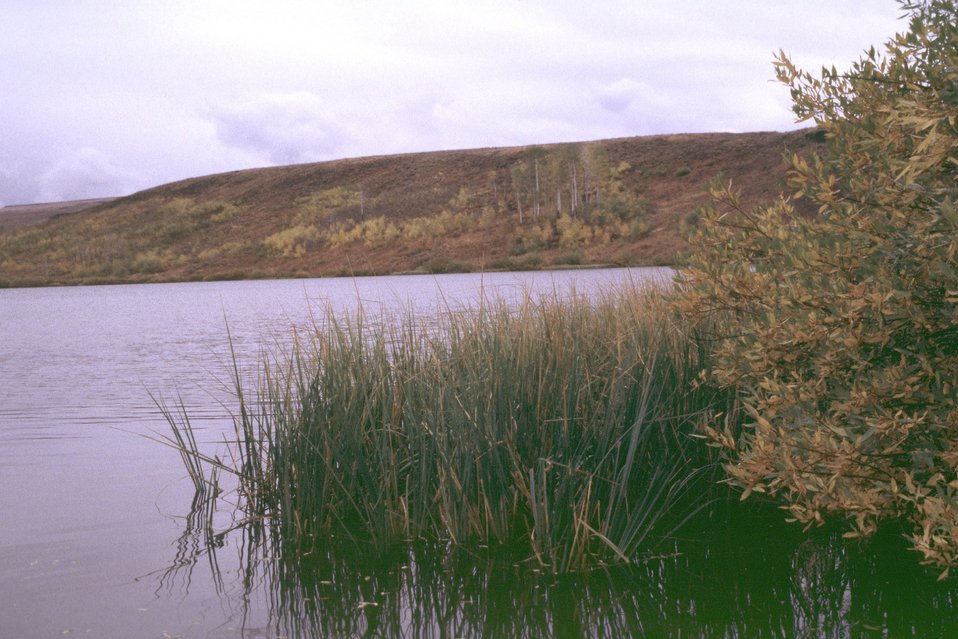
Fish Lake, Steen's Mountain.